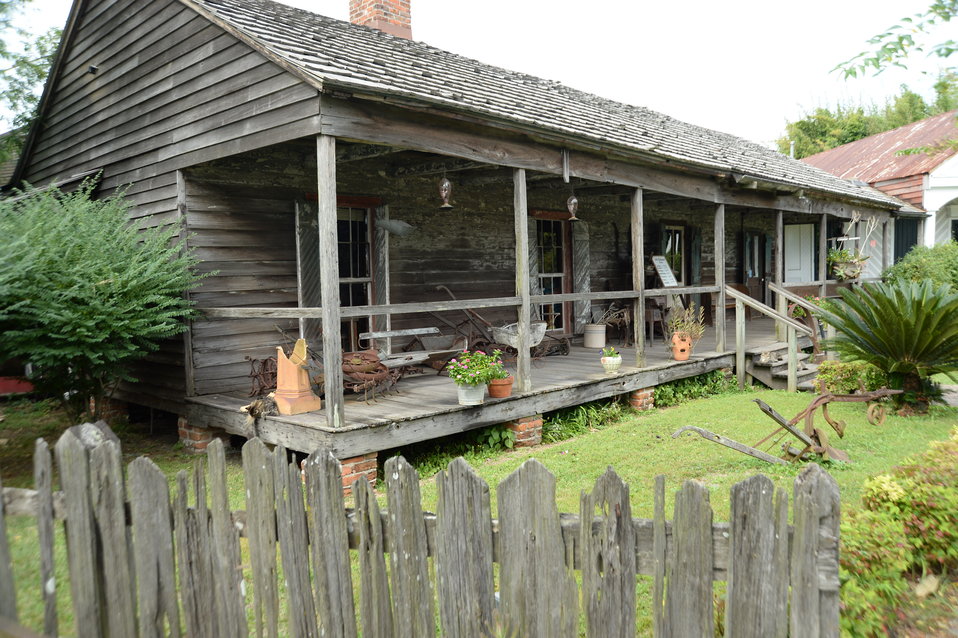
There are many scenic views surrounding New Orleans, LA on Tuesday, Nov. 19, 2013.